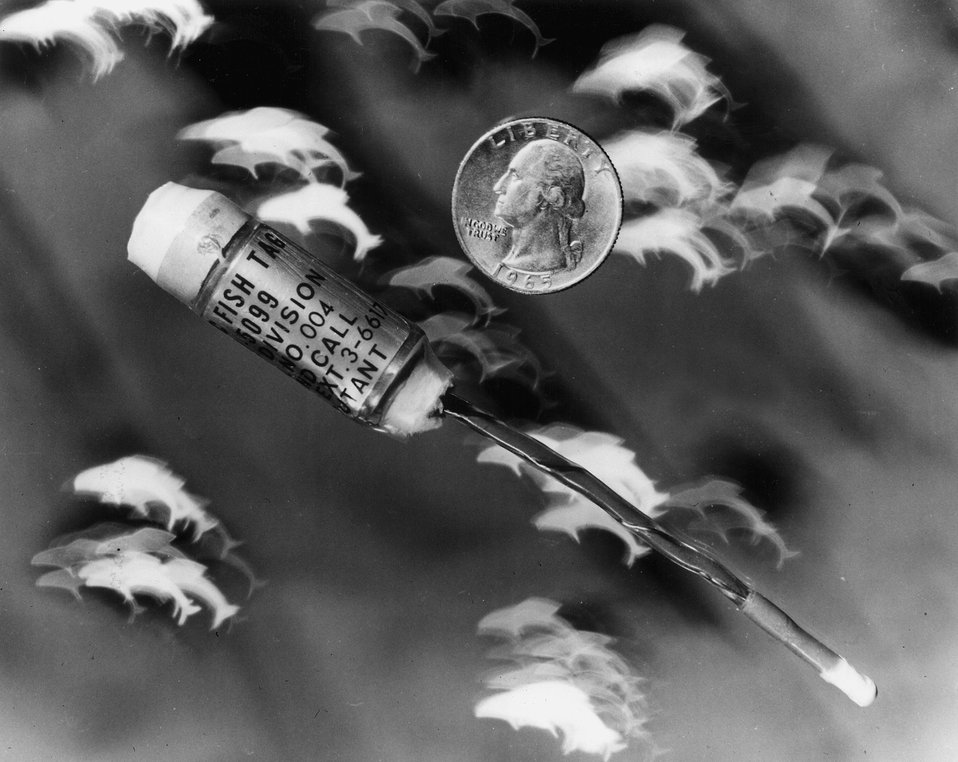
ULTRASONIC FISH TAG...The movements of warm-water game fish in natural environments and heated discharge areas are being monitored at Oak Ridge National Laboratory, Oak Ridge, Tennessee, using a temperature-sensing, battery-powered ultrasonic fish tag, developed especially for this study. c. 1972